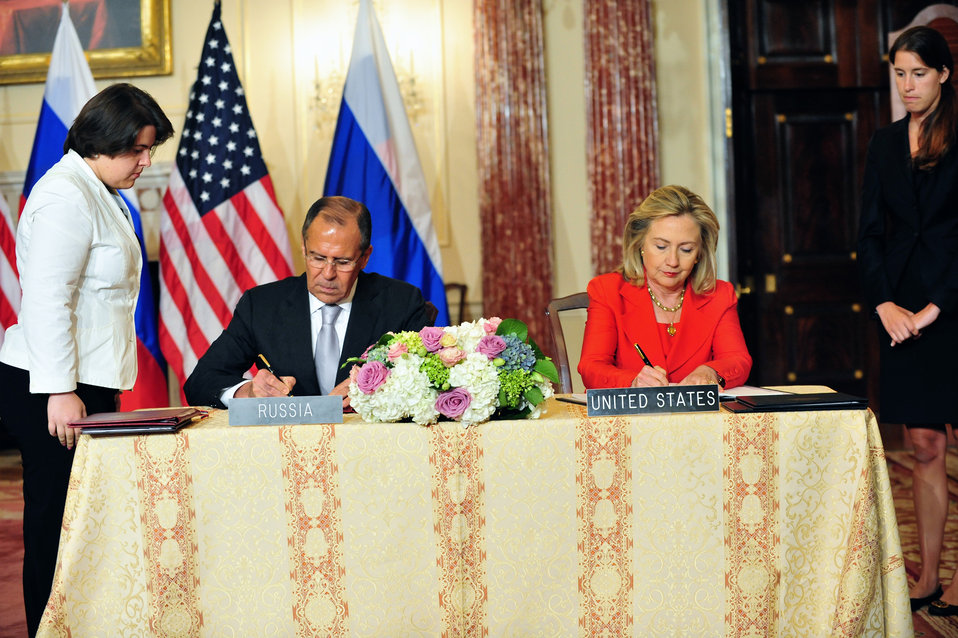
Secretary Clinton and Russian Foreign Minister Lavrov Participate in a Signing Ceremony

U.S. Secretary of State Hillary Rodham Clinton and Russian Foreign Minister Sergey Lavrov participate in a signing ceremony at the U.S. Department of State in Washington, D.C., on July 13, 2011.